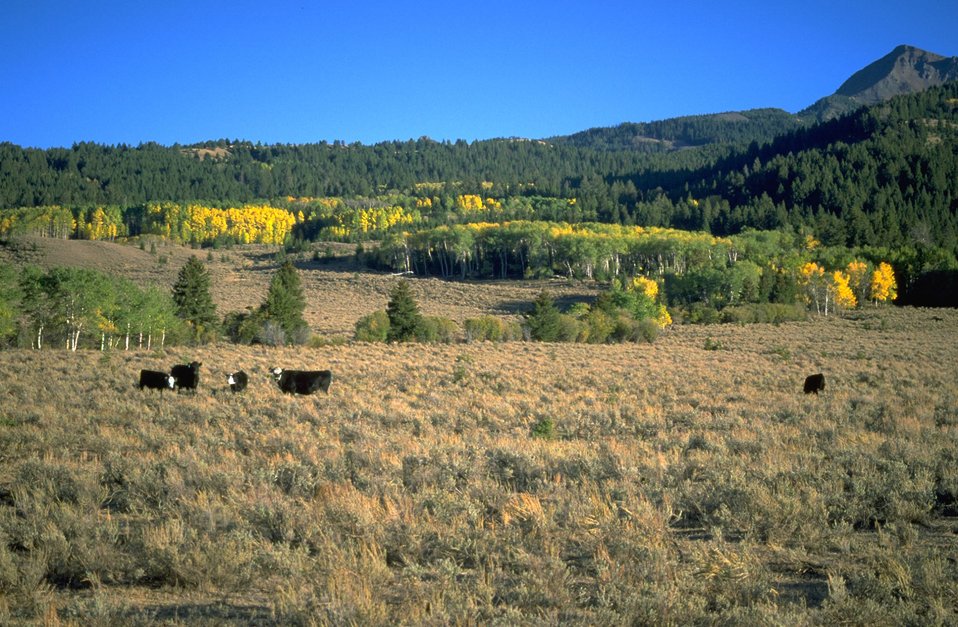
Aspen trees turning color in the Centennial Valley